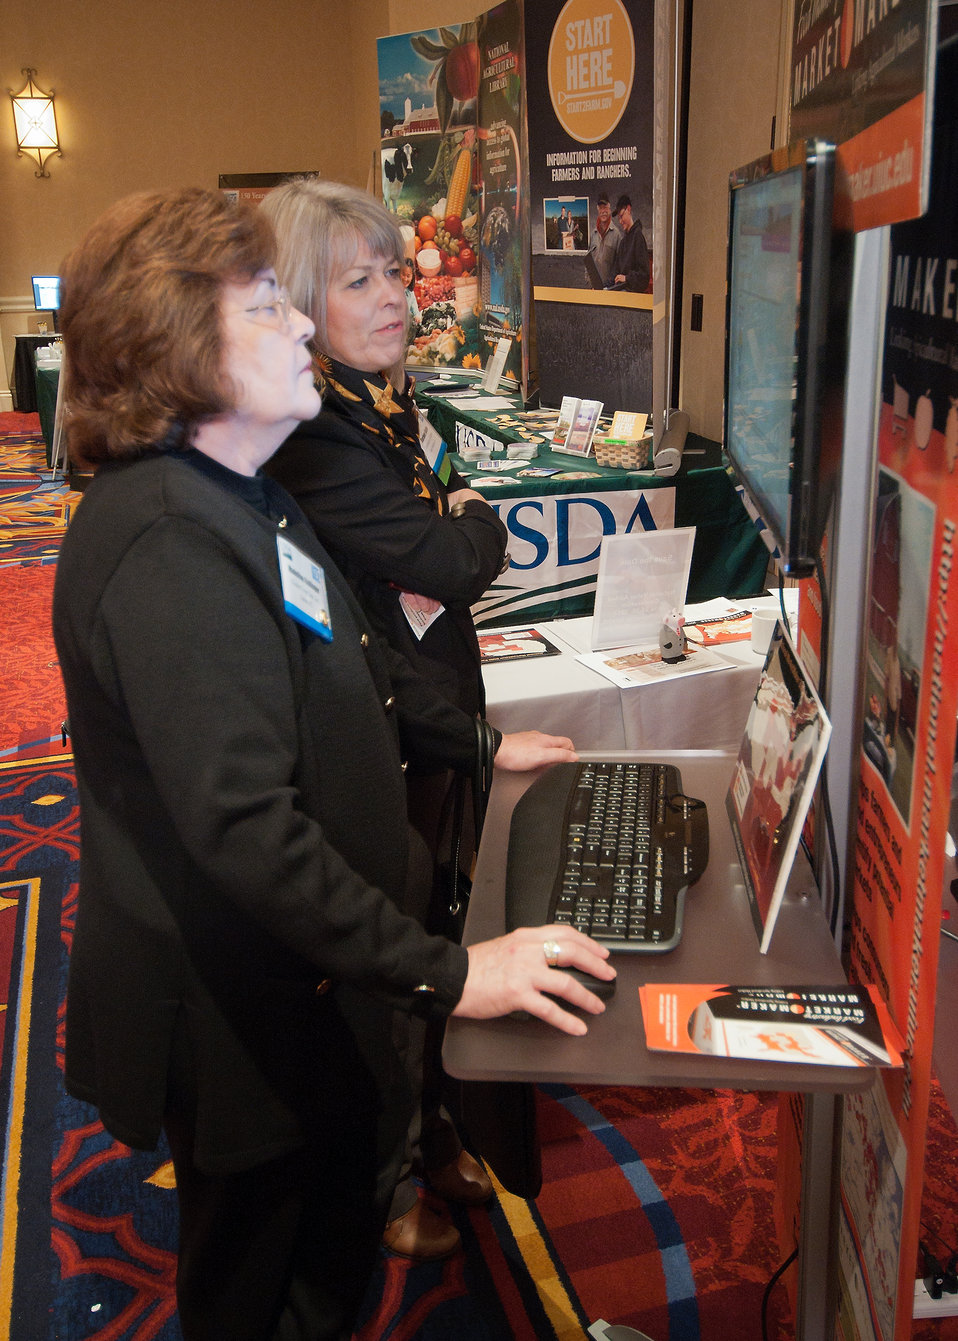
Madeline Mellinger (right), Glades Crop Care, Inc., Jupiter, Florida receives advice from Darlene Knipe (right), University of Illinois on the “Food Market Maker” a web-based resource that connects farmers, fishermen, processors, distributors, food retailers and consumers sponsored by the University of Illinois Extension, East Moline, Illinois in the exhibit hall at the 2012 Agricultural Outlook Forum, “Moving Agriculture Forward, Growing, Innovating and Celebrating 150 Years” held at the Crystal gateway Marriott Hotel Arlington, Virginia, Friday, February 24, 2012. This year's forum coincides with the 150th anniversary of the Department of Agriculture.